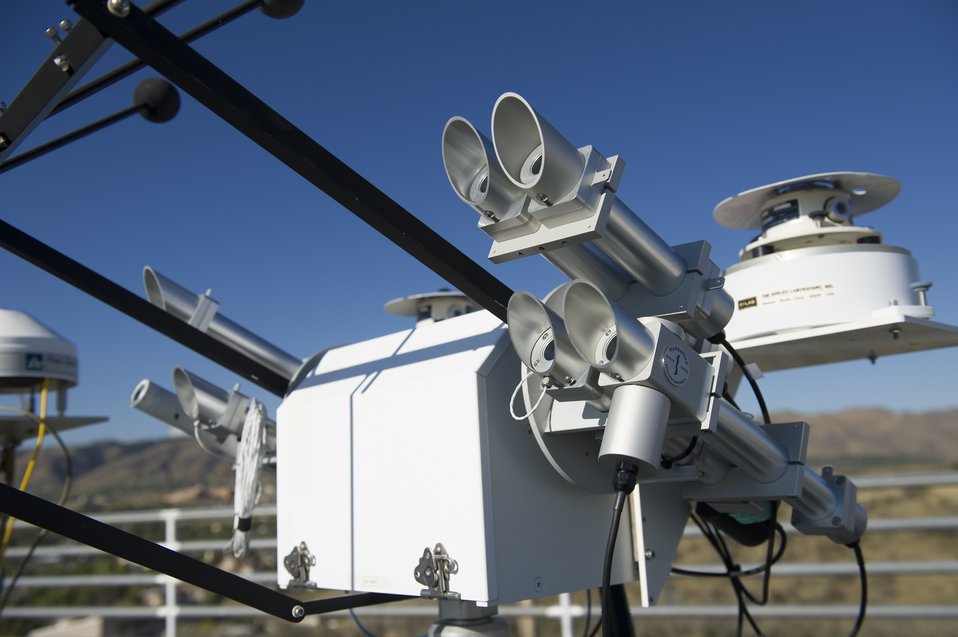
NREL scientists and researchers set up their equipment at the Solar Radiation Research Laboratory (SRRL) as they participate in the 2012 NREL Pyrheliometer Comparisons.